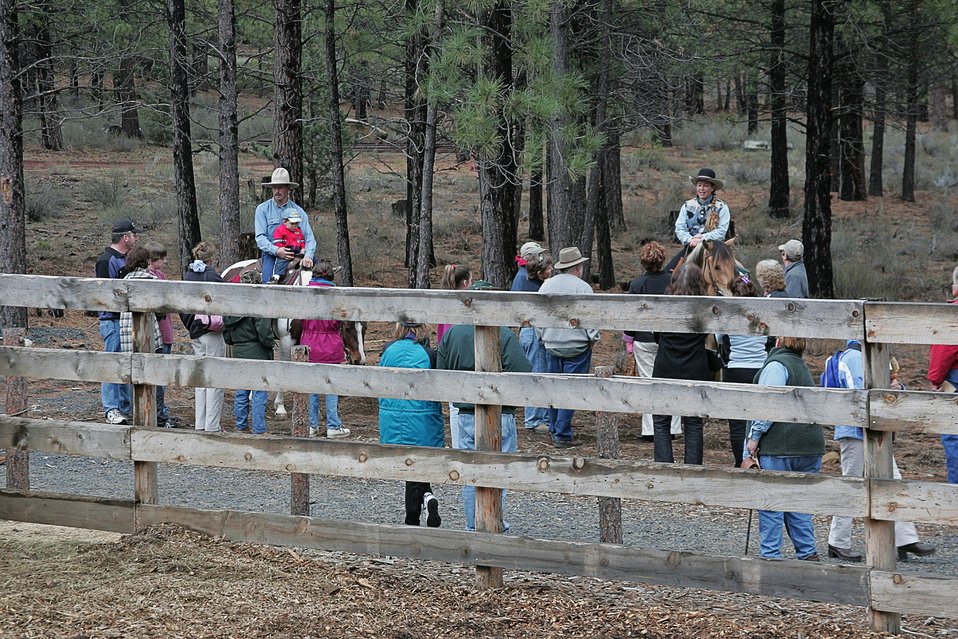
Horse Trainers Rich and Kitty Lauman talk with High Desert Museum visitors and potential adopters about working with wild horses Spirit and Sage.